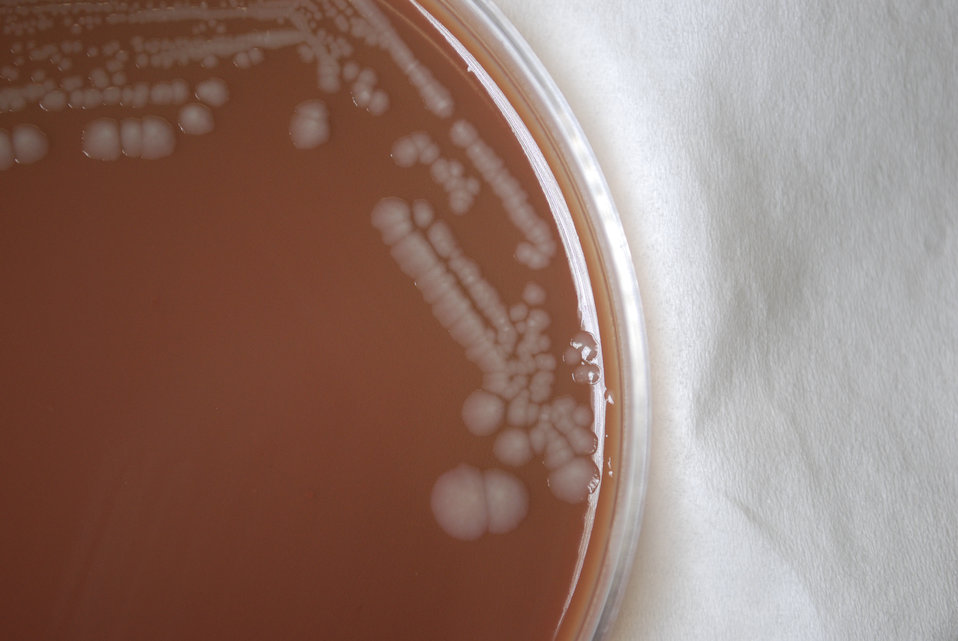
As a closer view of PHIL 12271, this photograph depicts the colonial morphology displayed by Gram-negative Burkholderia mallei bacteria, which was grown on a medium of chocolate agar, for a 72 hour time period, at a temperature of 37�C. B. mallei is the bacterium responsible for causing the infectious disease known as glanders.